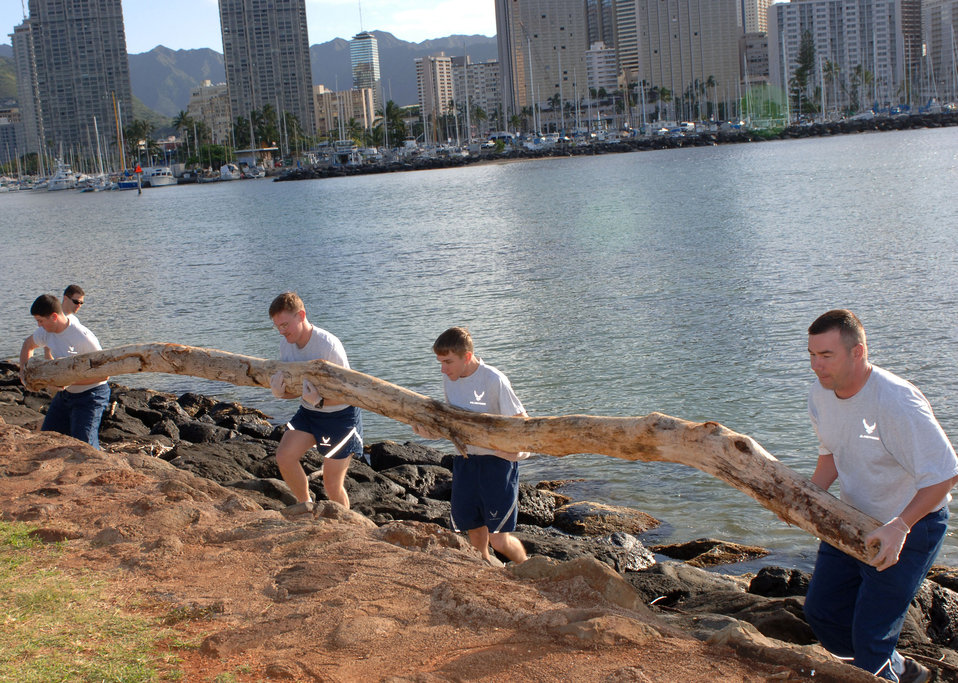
Hickam Airmen serve Oahu community during Jungle Day

Airman Chris Yanchun, (left to right) Maj. Matthew Stratton, Airman 1st Class Darrin Potter and Master Sgt. Donavon Schaefer lift a large driftwood log from the rocky shoreline March 13 along Ala Moana Beach Park in Honolulu. The Airmen volunteered for the beach cleanup as part of 13th Air Force's Jungle Day, a tradition for the Hickam Air Force Base unit that occurs every Friday the 13th.